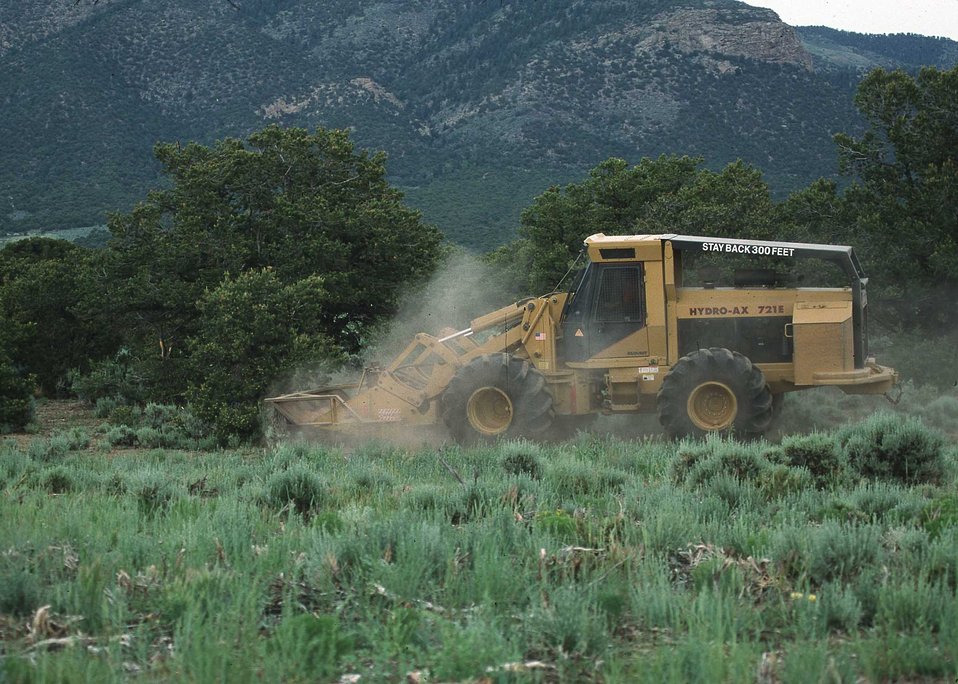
Hydroax at FT Ranch.